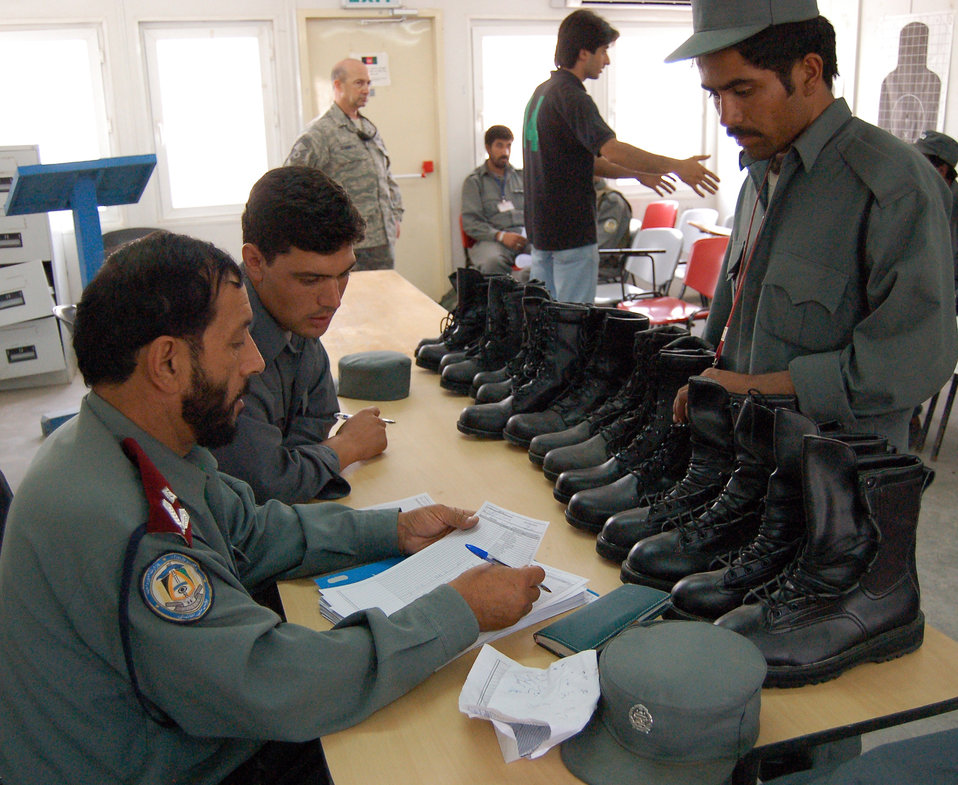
STC-A team contributes to development of trustworthy ANP force

Afghan National Police assigned to the Regional Training Center in Konduz, Afghanistan, record boot sizes during equipment issue for ANP students July 20. More than 200 police officers were processed for Focused District Development training, a program to create a professional and well-trained police force, district by district.